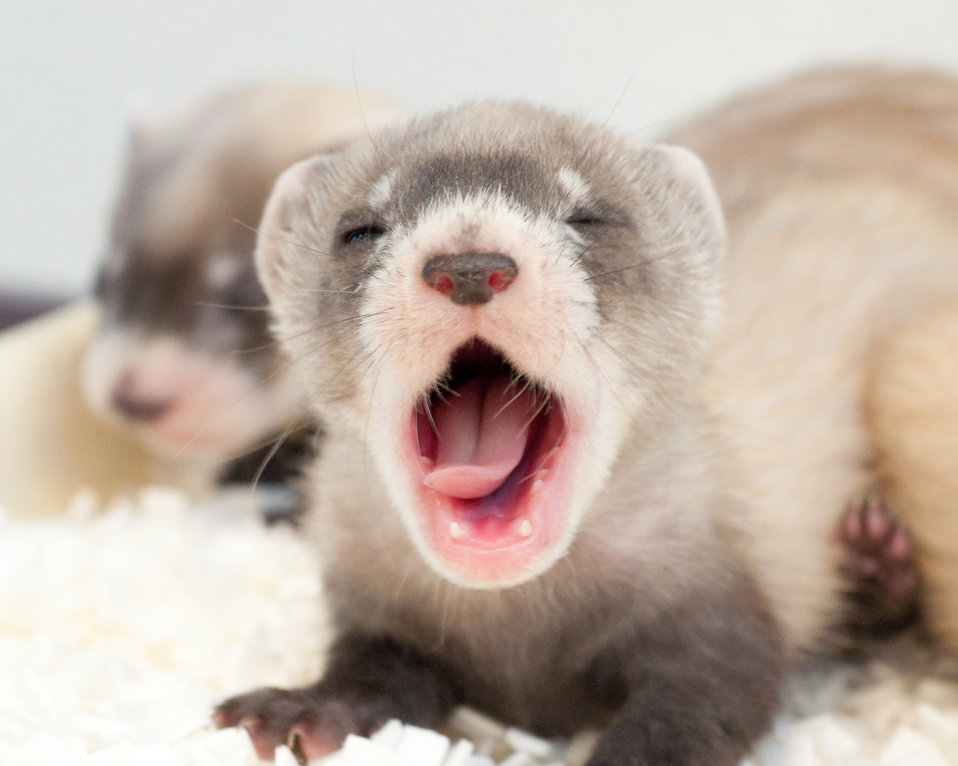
Sleepy Kit

The Black-footed Ferret Recovery Program is celebrating two major milestones in 2011: the 30th Anniversary of the species rediscovery and the 20th Anniversary of their successful return to the wild. This year a recurring renewal repeats itself as kits are born in successfully established wild populations and at the U.S. Fish and Wildlife Service’s National Black-footed Ferret Conservation Center in northern Colorado where this photo was captured.